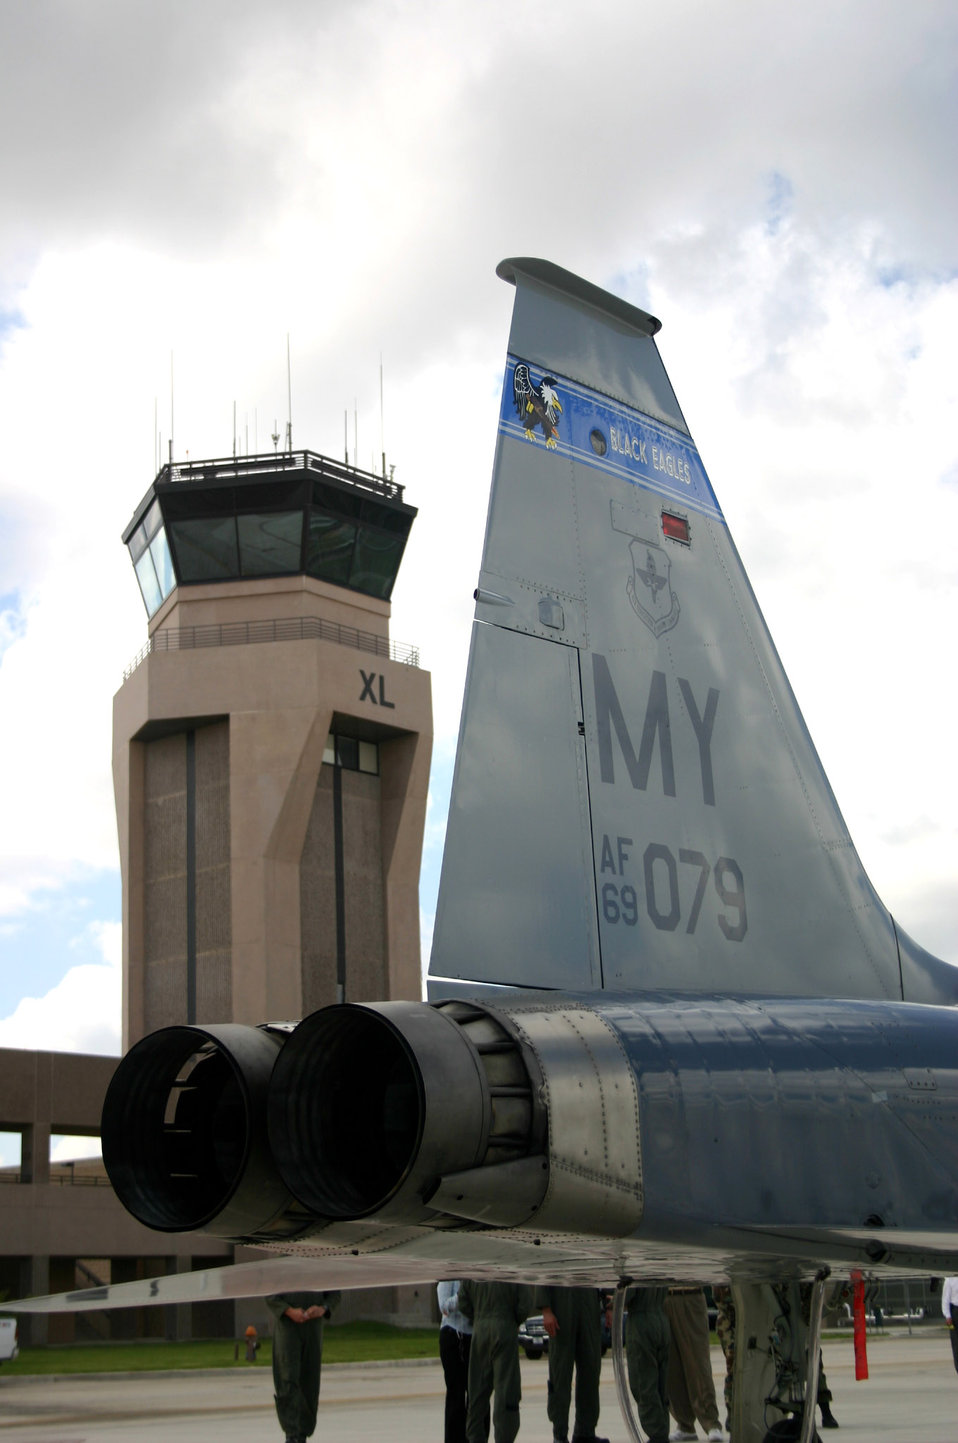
T-38s at Laughlin mark beginning of transition

The first